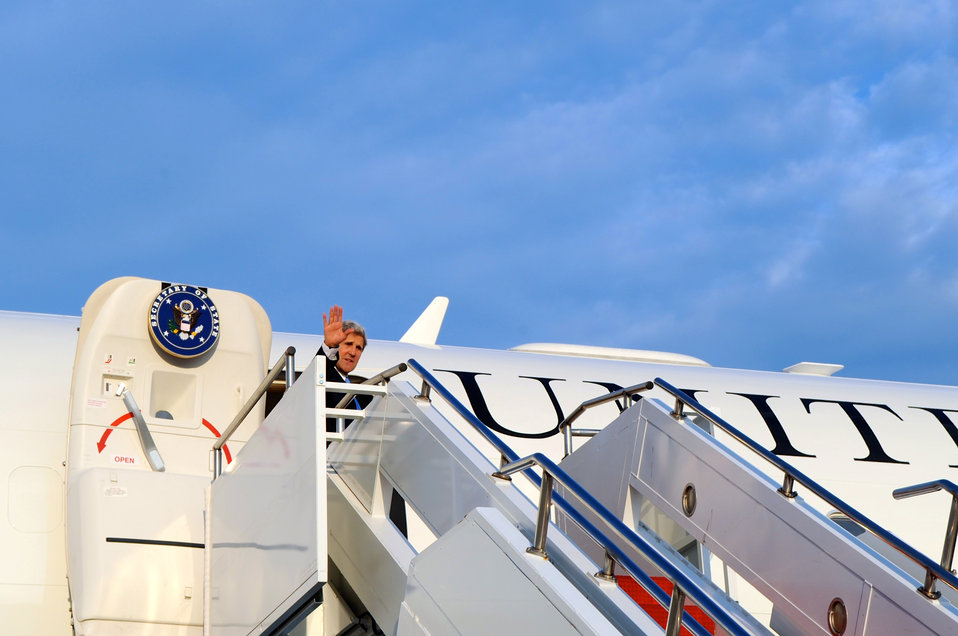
Secretary Kerry Waves Before Traveling to South America

U.S. Secretary of State John Kerry waves before boarding a U.S. Air Force jet at Andrews Air Force Base in Maryland on August 11, 2013, for the flight to South America to visit to Colombia and Brazil.